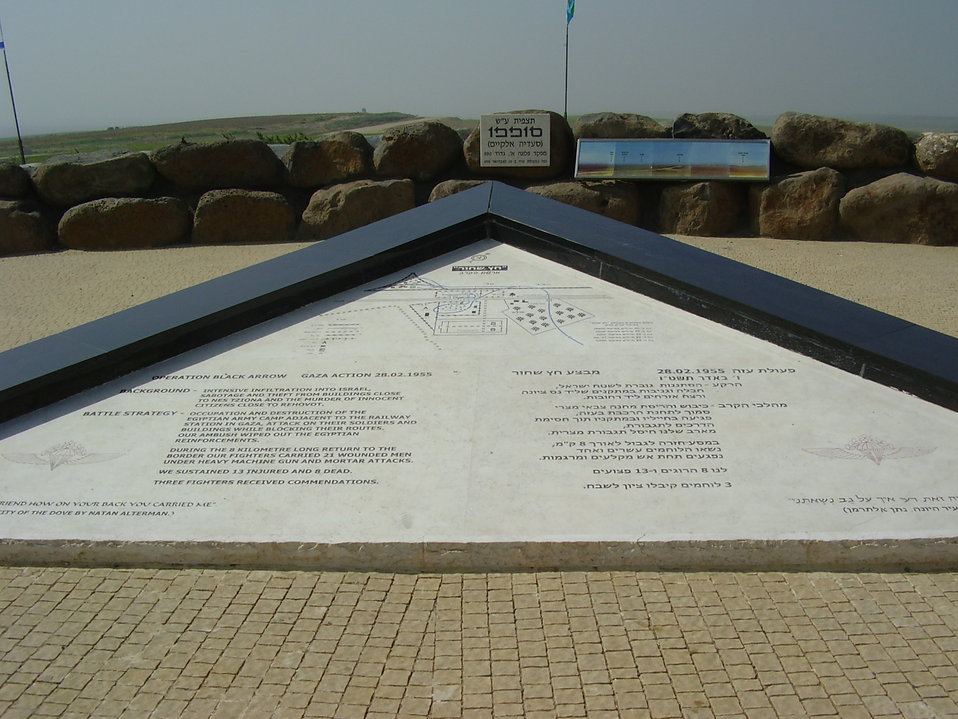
'black arrow' war memorials near gaza strip אנדרטת 'חץ שחור' מול עזה